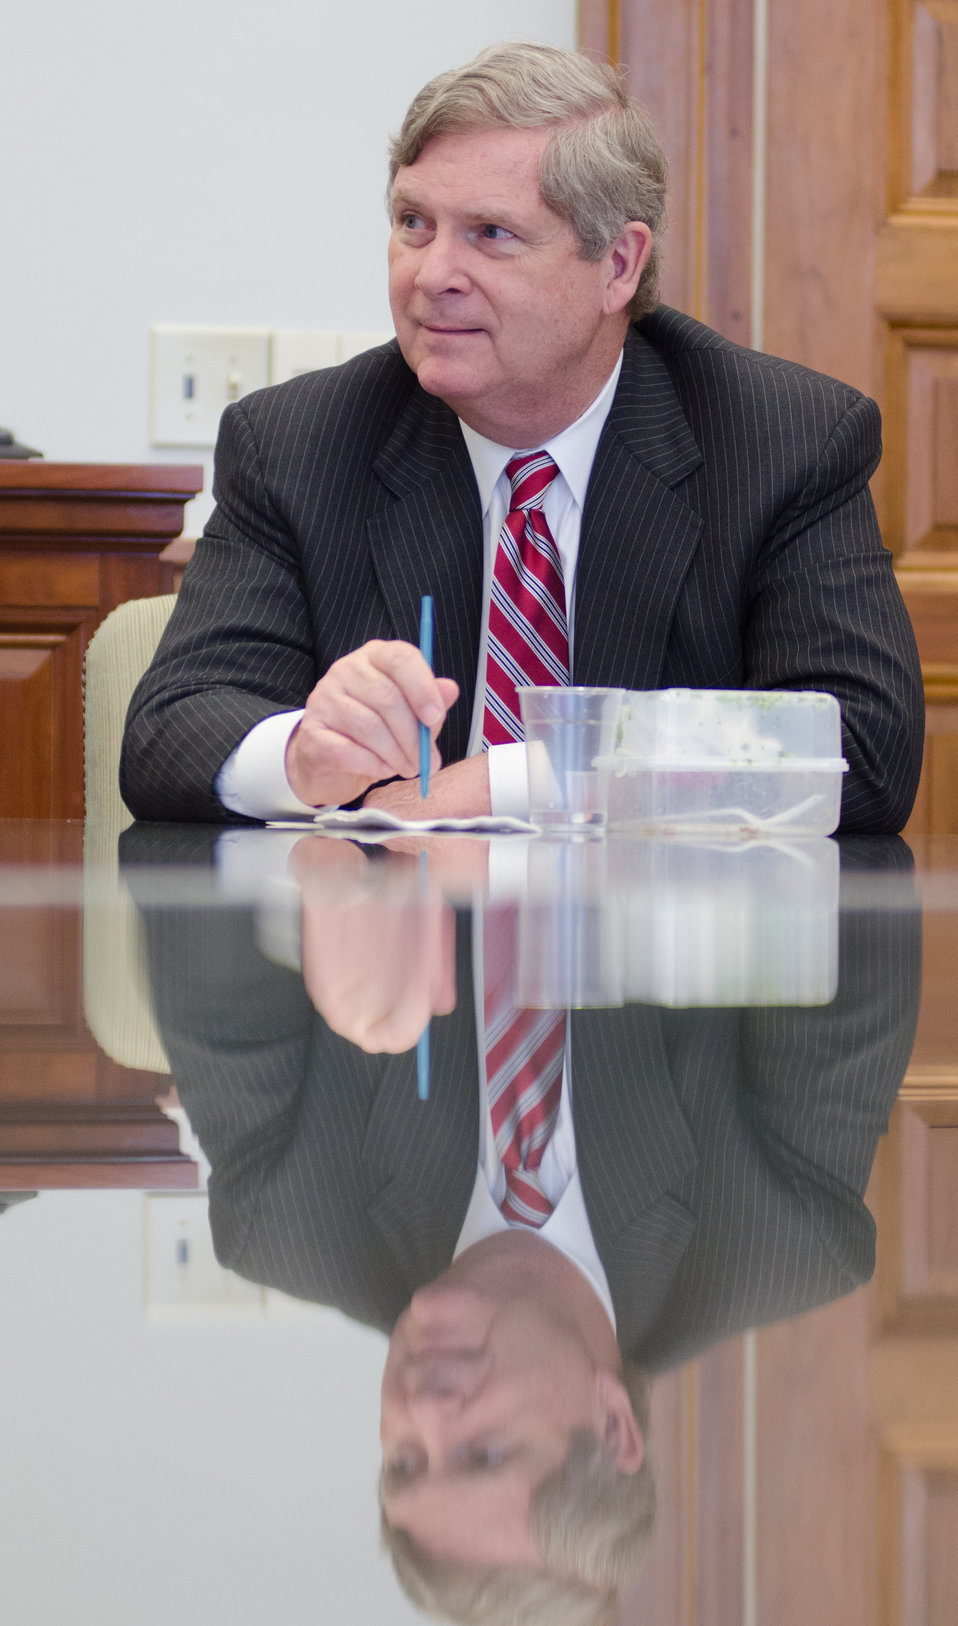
U.S. Department of Agriculture (USDA) Secretary Tom Vilsack, meets with employees discuss the roles they play within the department, during a Brown Bag Lunch that he periodically has with employees, in his conference room, on Tuesday, April 9, 2013, in Washington, D.C.